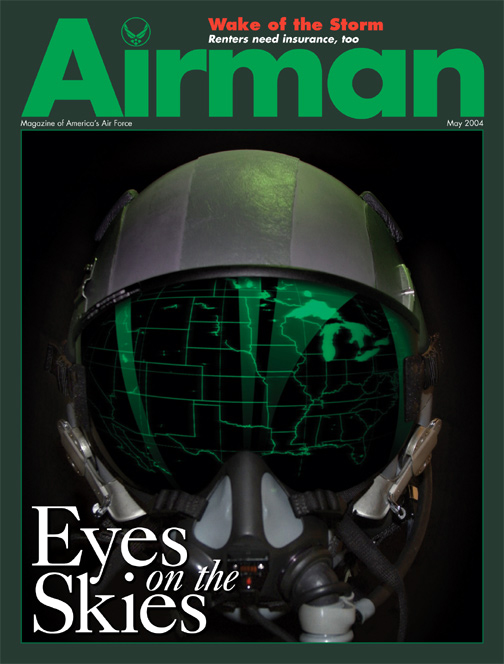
May Airman

SAN ANTONIO -- May's cover of Airman magazine shows a radar image of the United States is reflected on the visor of an Air Force flier representing 1st Air Force's airspace responsibility as the lead Air Force agent for Operation Noble Eagle.